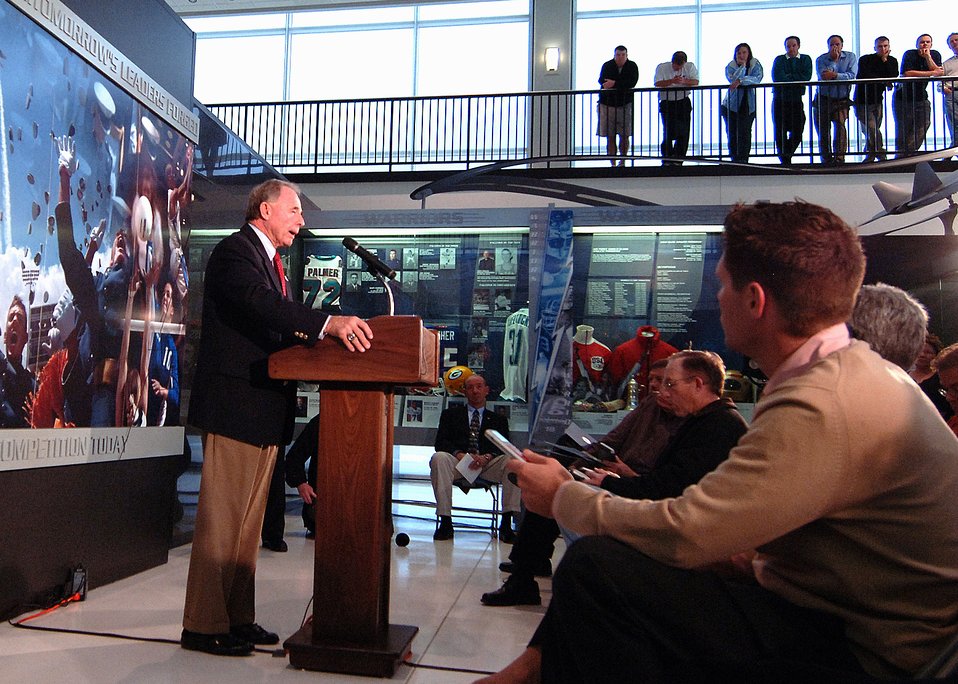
Legend Retires

Air Force Falcons Head Football Coach Fisher DeBerry announces his retirement Friday during a press conference at the United States Air Force Academy in Colorado Springs, Colo. DeBerry has been head coach since 1984.